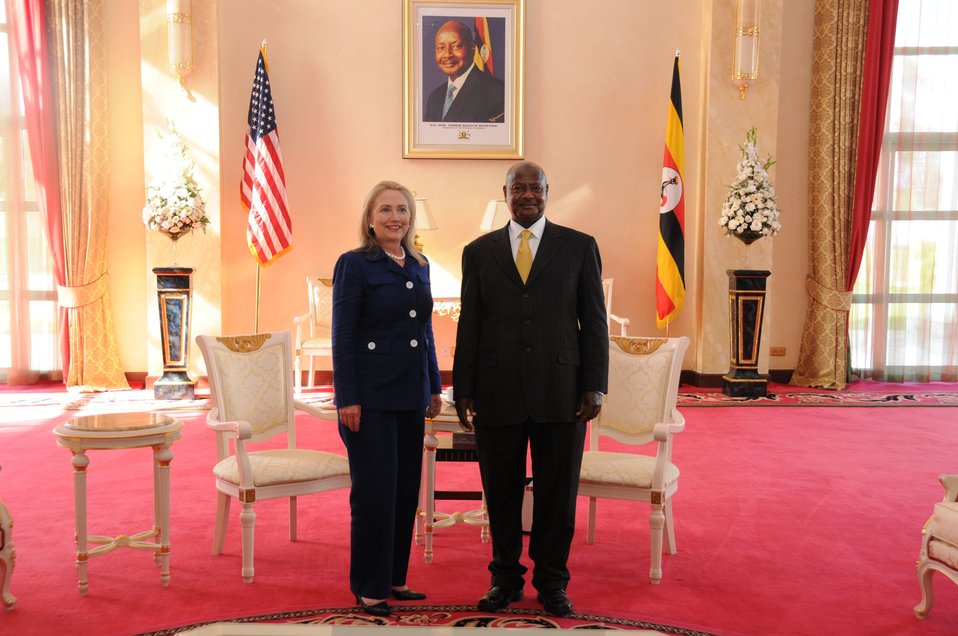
Secretary Clinton Poses With Ugandan President Museveni

U.S. Secretary of State Hillary Rodham Clinton poses for a photo with Ugandan President Yoweri Museveni after a meeting in Kampala, Uganda on August 3, 2012.